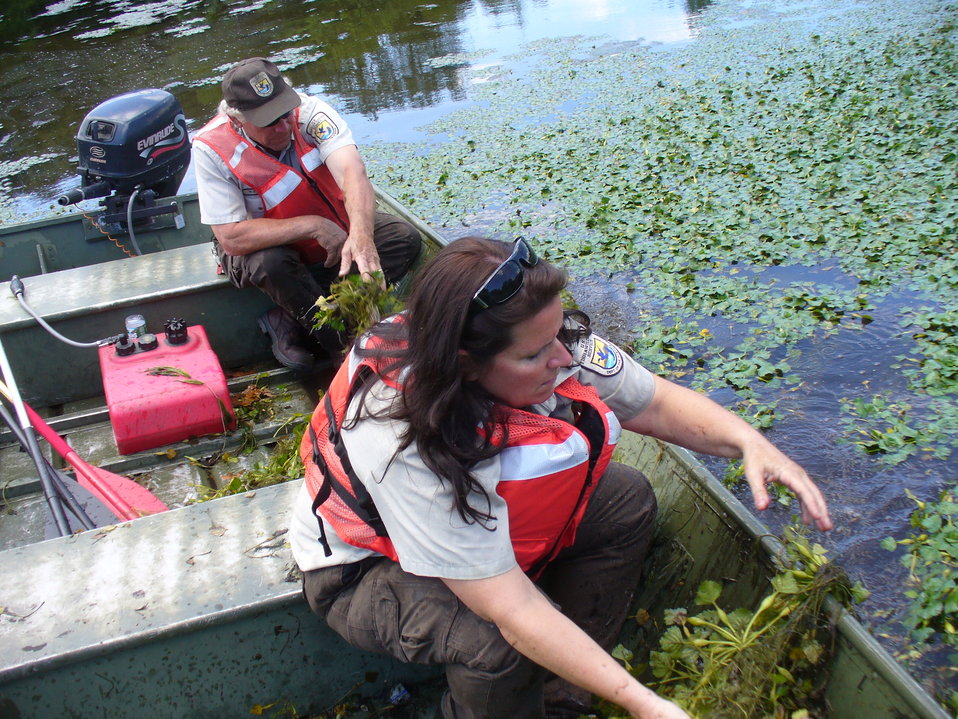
Pulling water chestnut

Refuge staff at Oyster Bay National Wildlife Refuge, NY pulling invasive water chestnut into a boat .